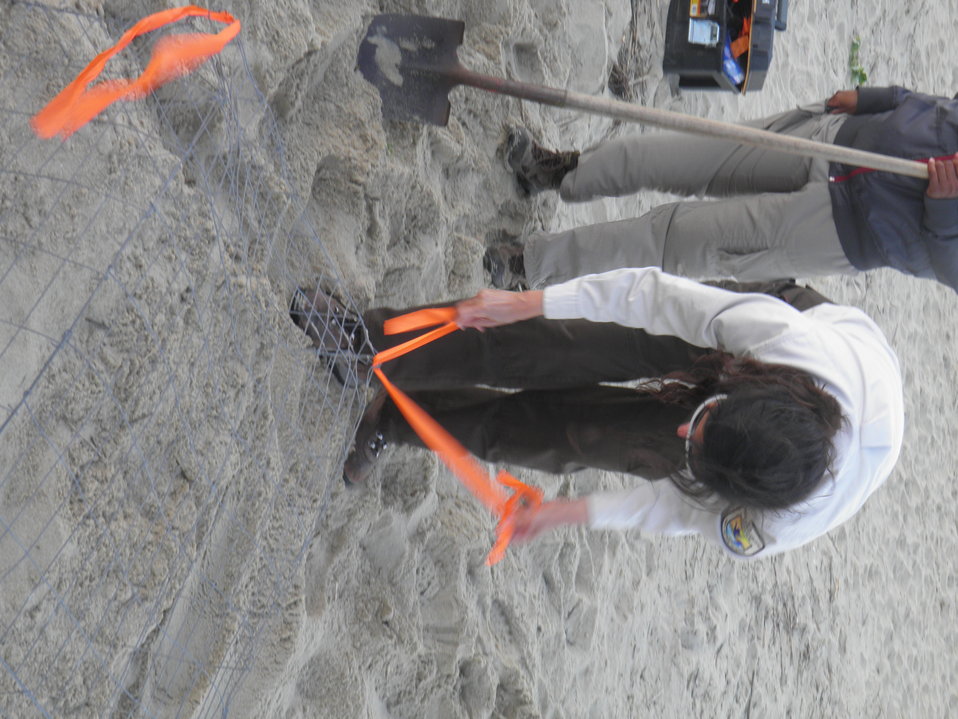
Marking the cage

Credit: USFWS
Crawl 3, Nest 3